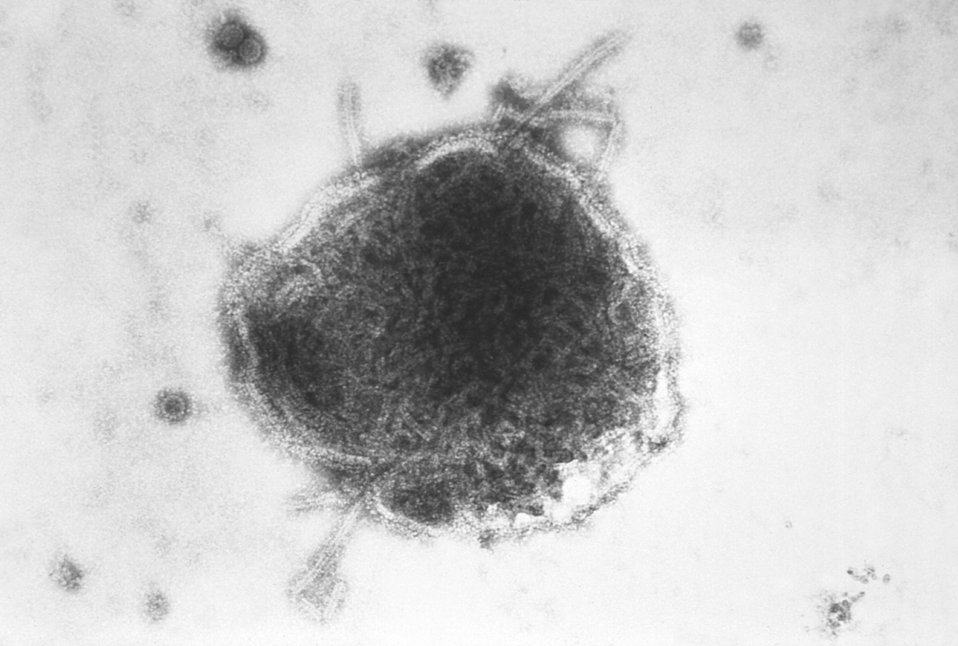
This electron micrograph reveals both a paramyxovirus measles virus, and virions of the polyomavirus, simian virus SV40.